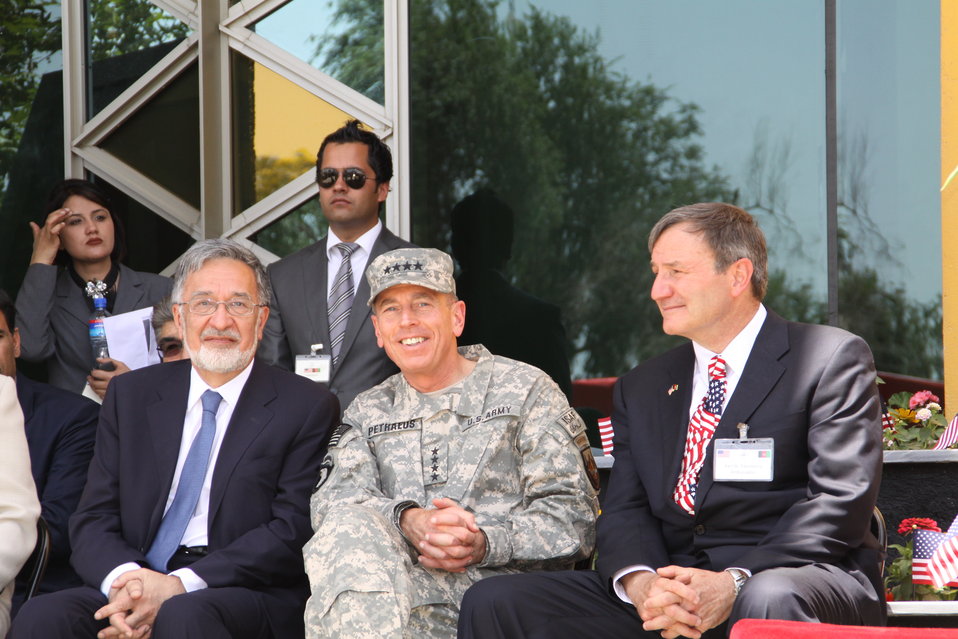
Kabul Official July 4th Celebration